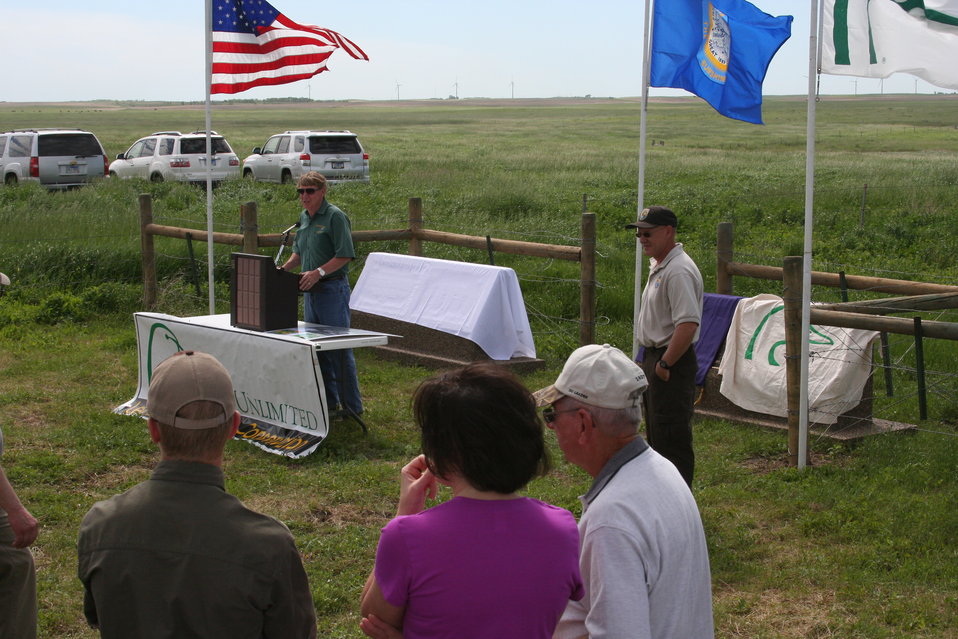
2013 Green Wing Dedication